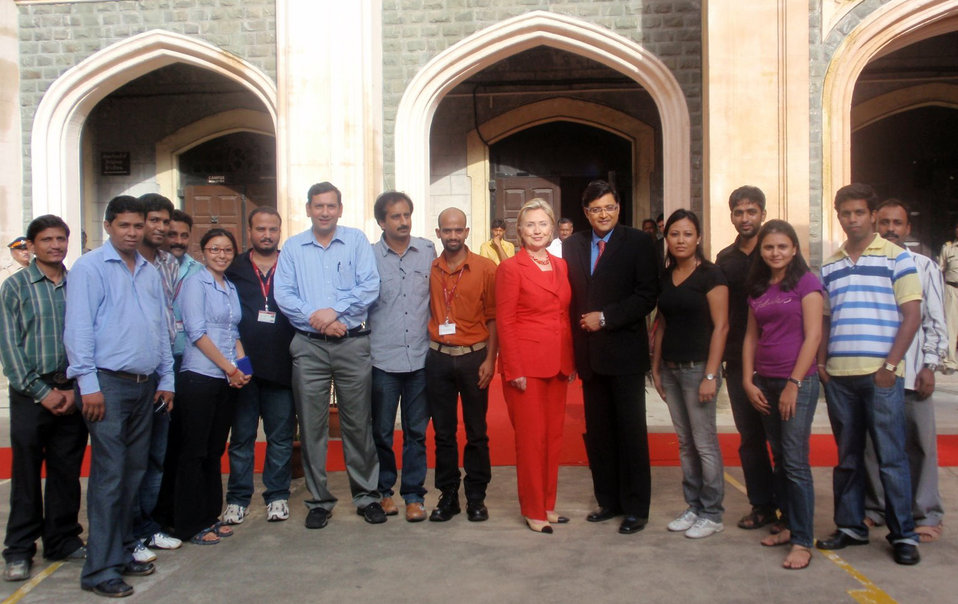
Behind the Scenes: Times Now Interview

Times Now Anchor Arnab Goswami and his production staff pose for a photo following an interview with U.S. Secretary of State Hillary Rodham Clinton in Mumbai, India July 18, 2009.